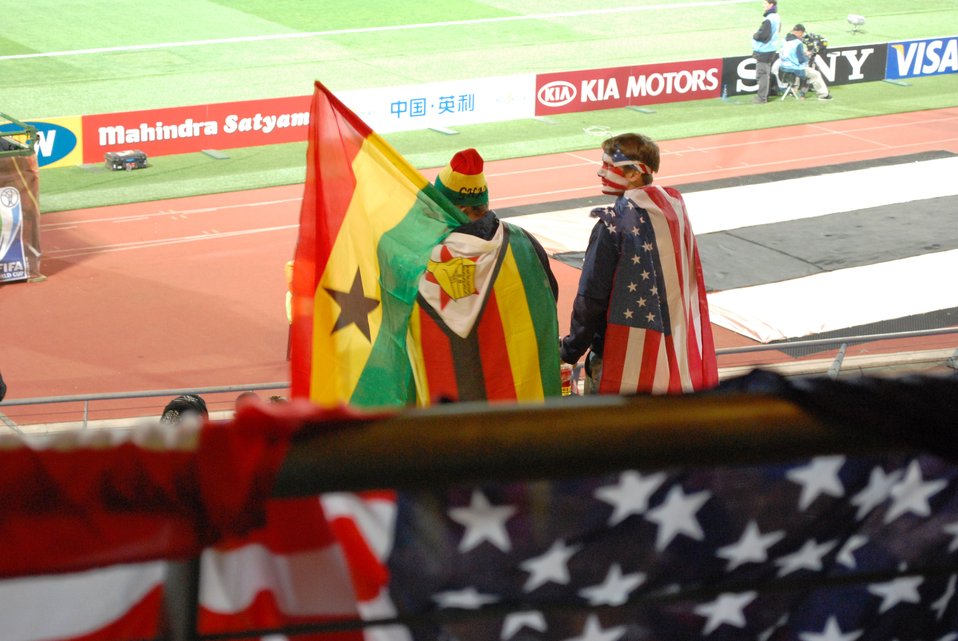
Ghanaian and American fans cheer for their respective teams during the FIFA 2010 World Cup soccer match between the United States and Ghana on June 26, 2010, at the Royal Bafokeng stadium in Rustenburg, South Africa.